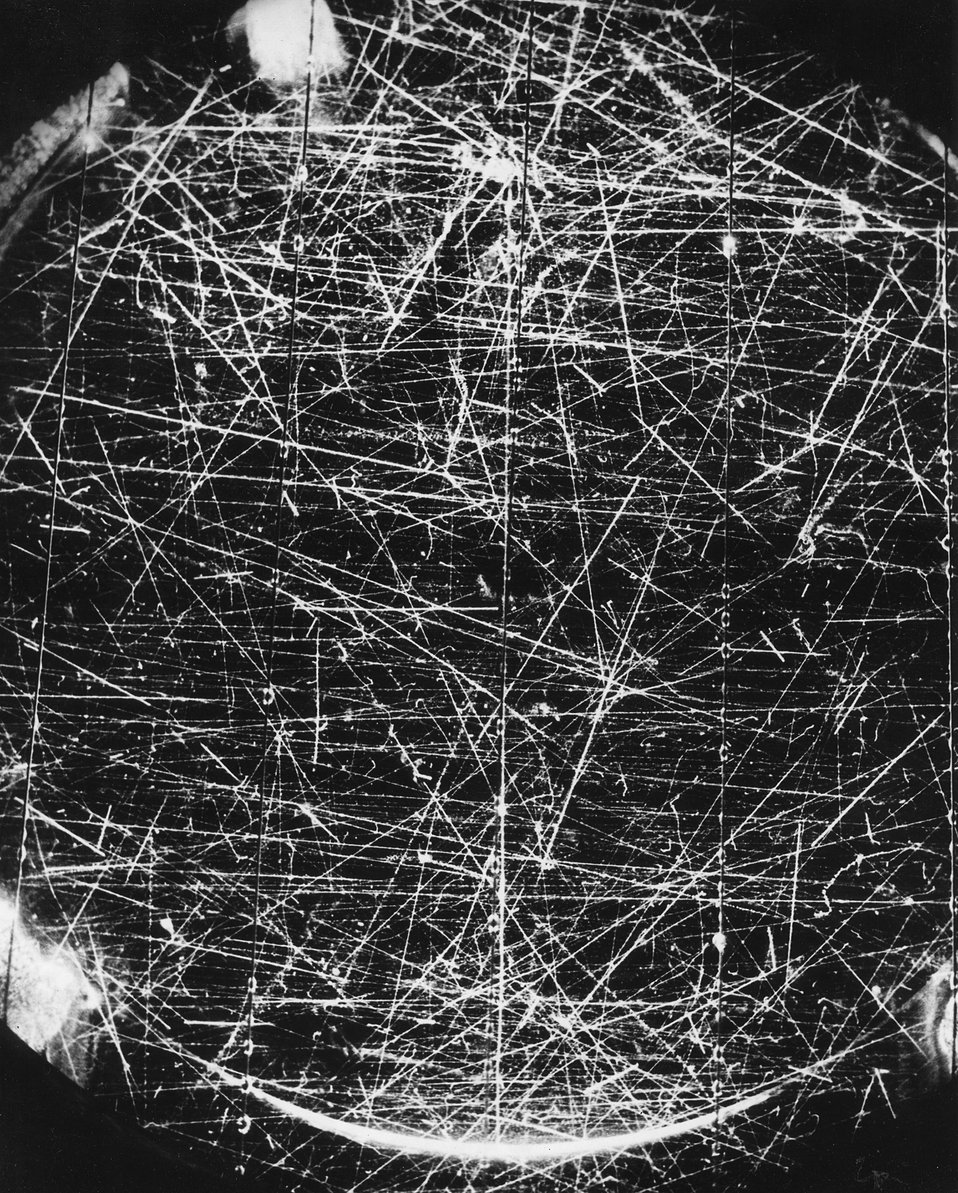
Billion-volt atomic particles in Brookhaven Cosmotron. c. 1957